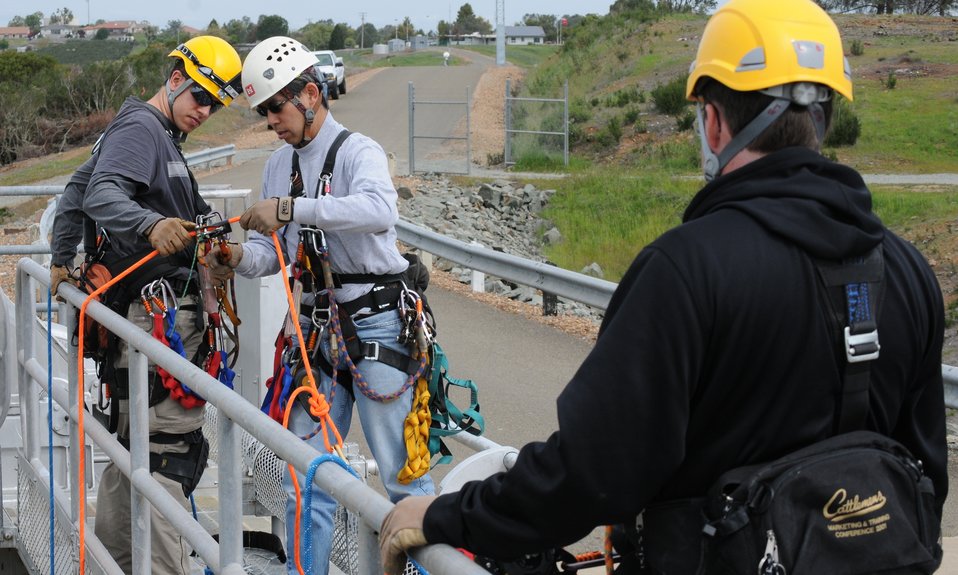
Corps’ engineers climb, inspect New Hogan Dam

U.S. Army Corps of Engineers Sacramento District engineers and climb team members (from left) Christopher Abela, Charles Jeung and Levi Bowers prepare their climbing ropes and equipment during an inspection of the tainter gates at New Hogan Dam, near Valley Springs, Calif., April 10, 2012. Tainter gates are a type of flood gate used in dams to control water flow. New Hogan Dam reduces flood risk to the city of Stockton and stores water used for irrigation, drinking and hydroelectric power.